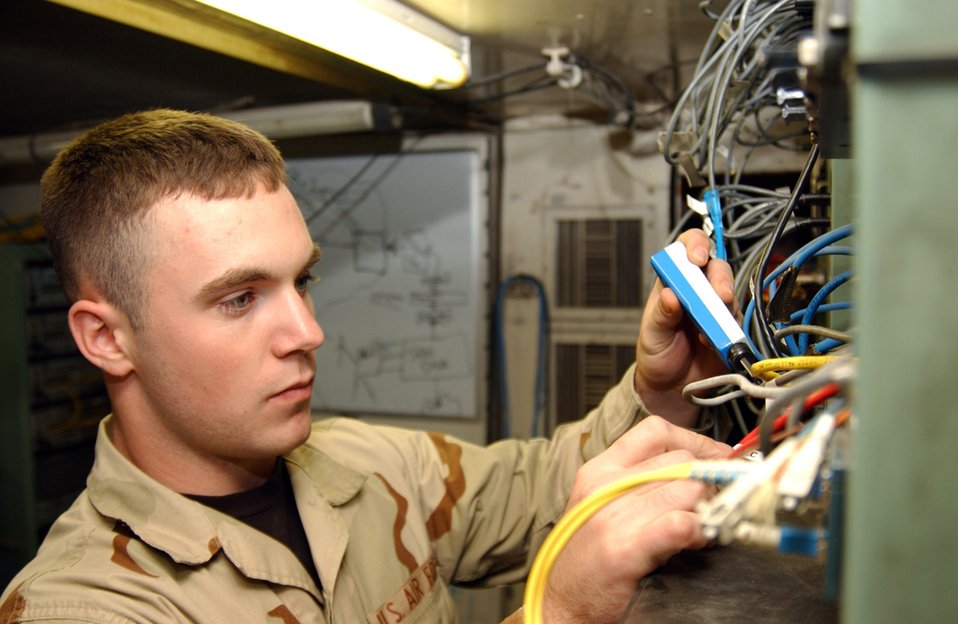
Kingpin

BALAD AIR BASE, Iraq (AFPN) -- Airman 1st Class Josh Green checks the wires on a system in the Kingpin communications tent. He is with the 727th Expeditionary Air Control Squadron.